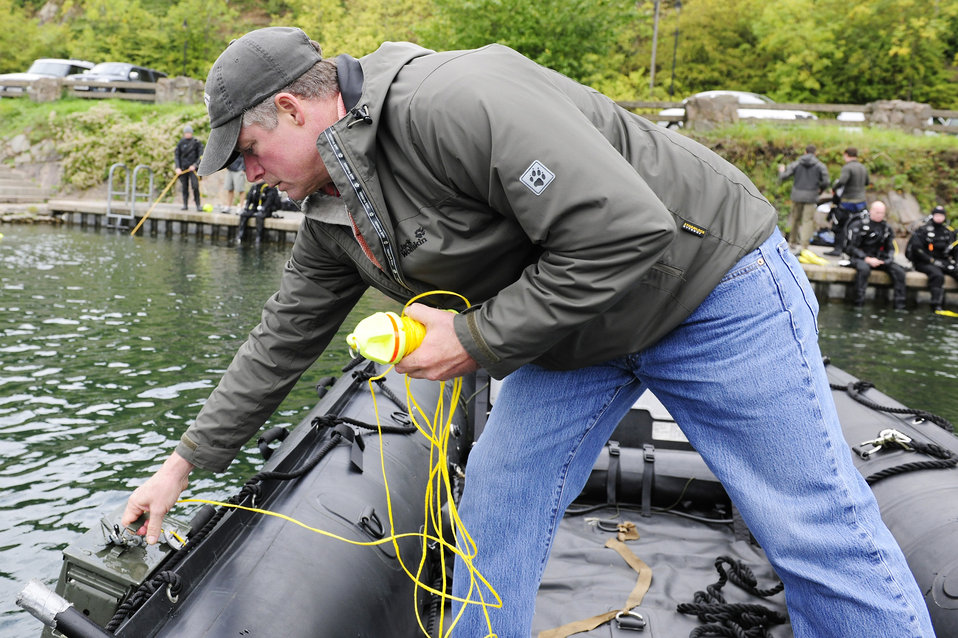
Pararescuemen train to save lives

Retired Master Chief Petty Officer Doug Westling places an ammunition can into the water during rescue dive training Oct. 5, 2010, at Stoney Cove, England. For training purposes, white tape was placed over goggles to simulate low visibility when locating and retrieving submerged sensitive materials. Mr. Westling is a 56th Rescue Squadron master diver.